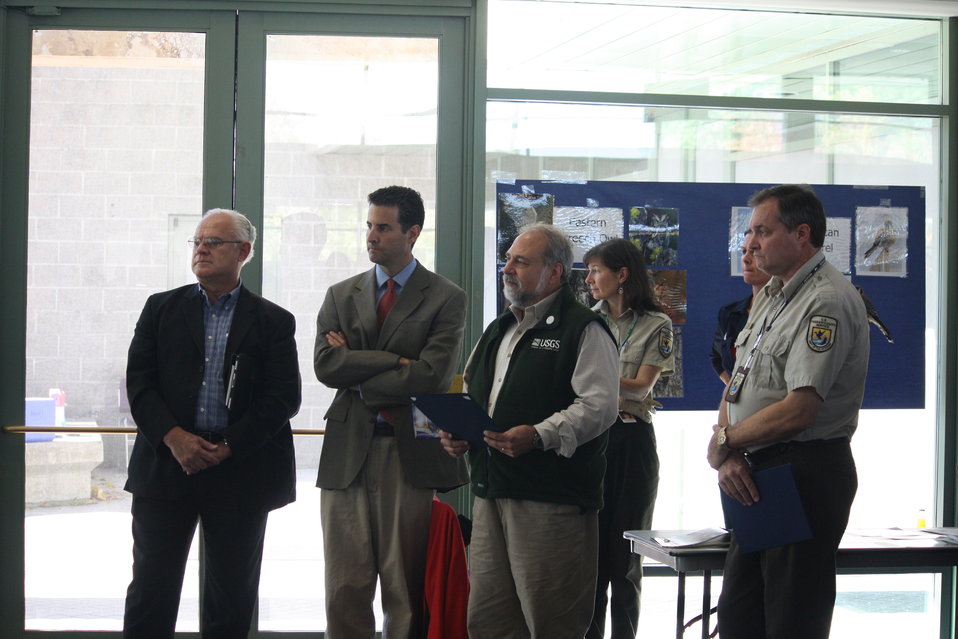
Patuxent Research Refuge 75th Anniversary

Larry Swaggert of the National Wildlife Federation and Representative John Sarbanes join Patuxent staff at the dedication of the Whooping Crane Observatory.